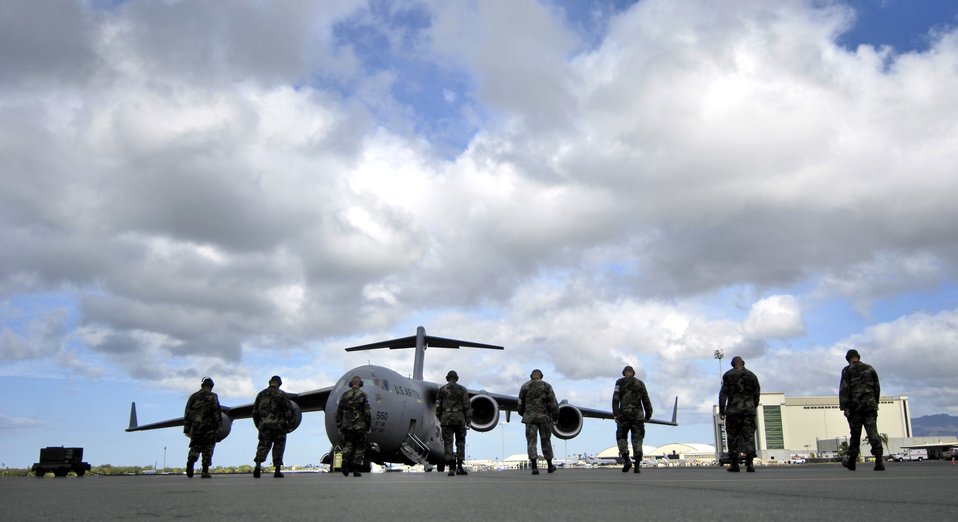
Hickam C-17 crews prep for Rodeo

Crew chiefs conduct a foreign object debris, or FOD, walk June 28 before launching a C-17 Globemaster III from Hickam Air Force Base, Hawaii. The Airmen, from the 15th Aircraft Maintenance Squadron, are practicing for the upcoming Air Mobility Command Rodeo at McChord AFB, Wash.